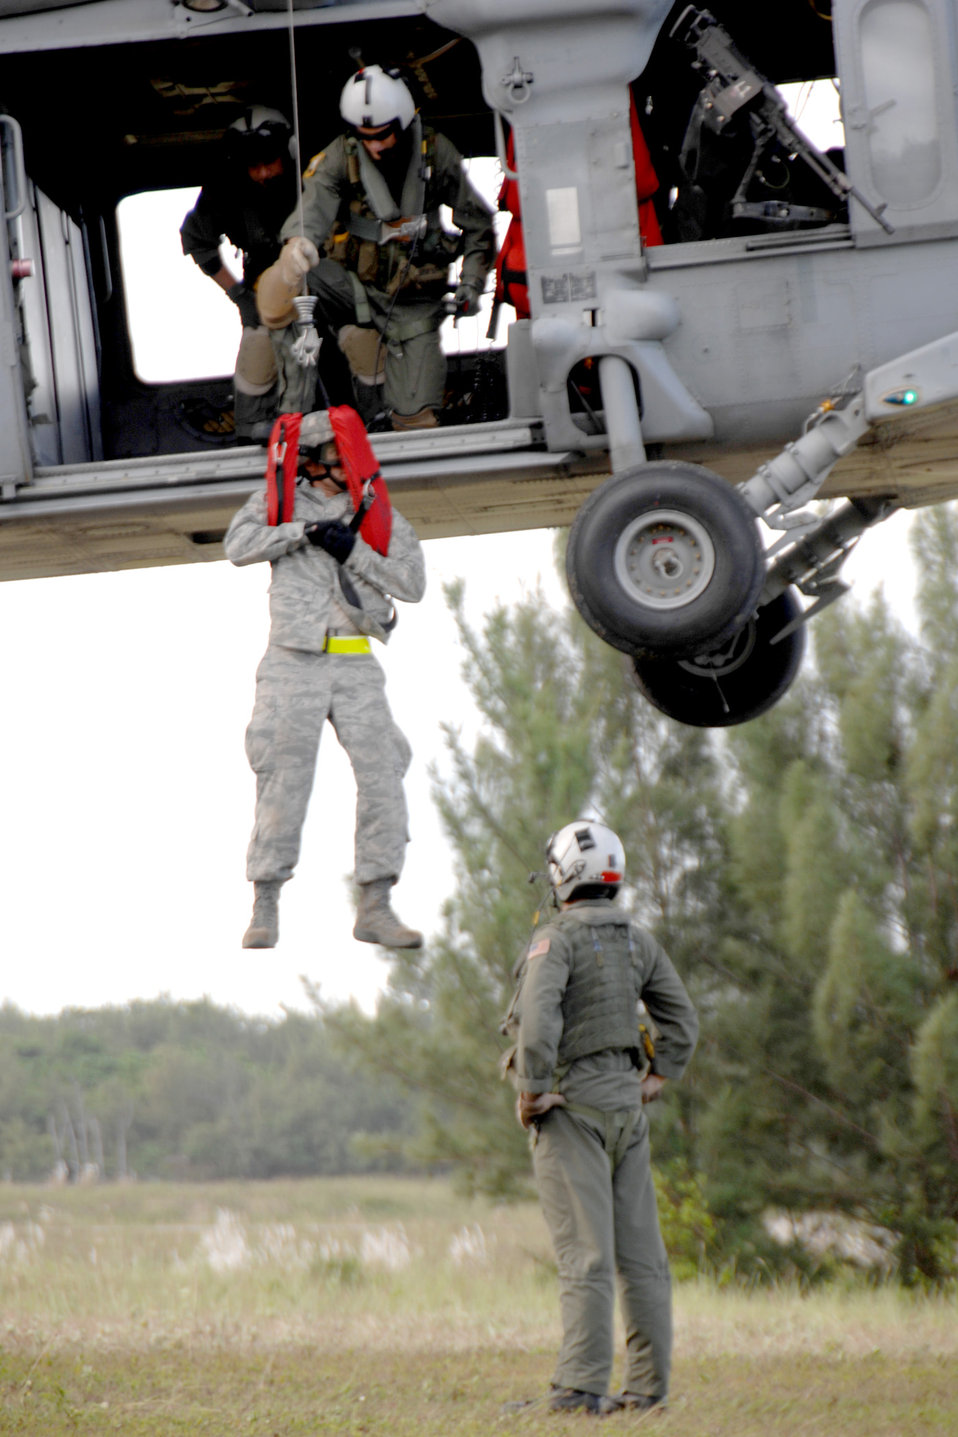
Airmen, Sailors train together for future relief efforts

Servicemembers assigned to the 36th Mobility Response Squadron and HSC-25 conduct medical evacuation training Oct. 13, 2010, at Northwest Field, Guam. The joint field training exercise was performed in an effort to interchange and familiarize themselves with each other's tactics, techniques and procedures to be able to interoperate and conduct joint humanitarian assistance/disaster relief missions in the Pacific region.